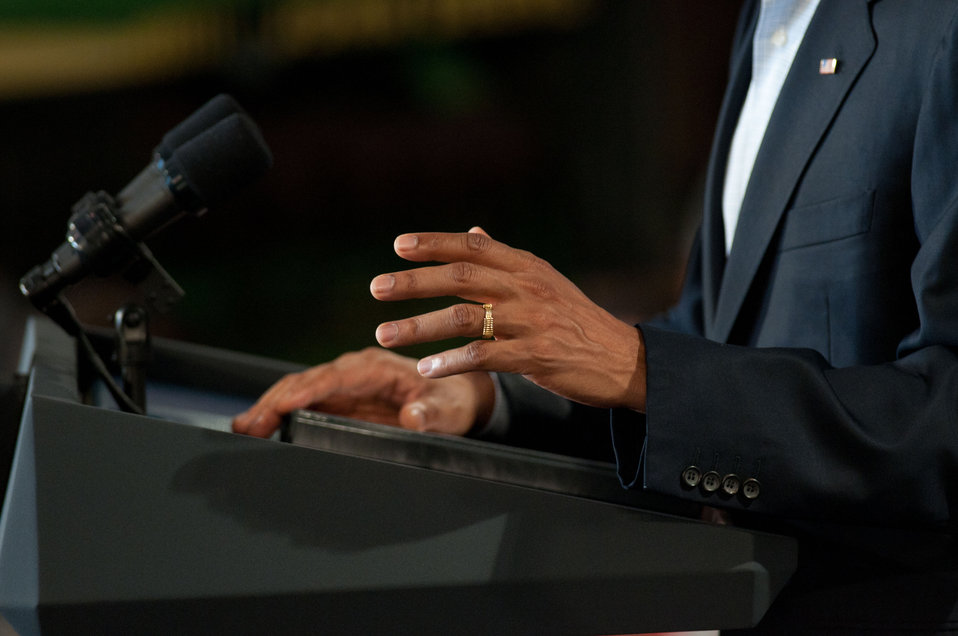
President Barack Obama speaking at the Northeast Iowa Community College, for a White House Rural Economic Forum on Tuesday, August 16, 2011. The President’s visit will focus on agriculture’s contribution to the national economy, and how to create more jobs in rural America.